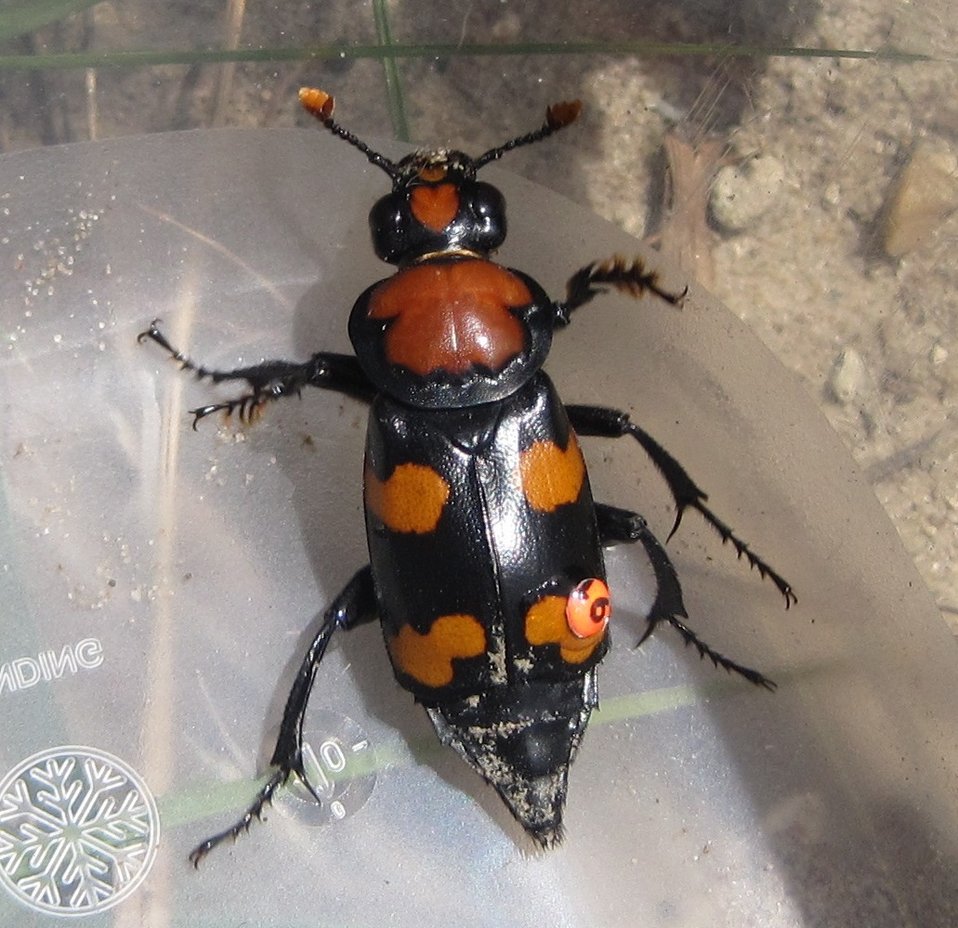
American Burying Beetle

The Nebraska Partners for Fish and Wildlife program has worked on numerous projects benefitting the Federally-listed American Burying Beetle.